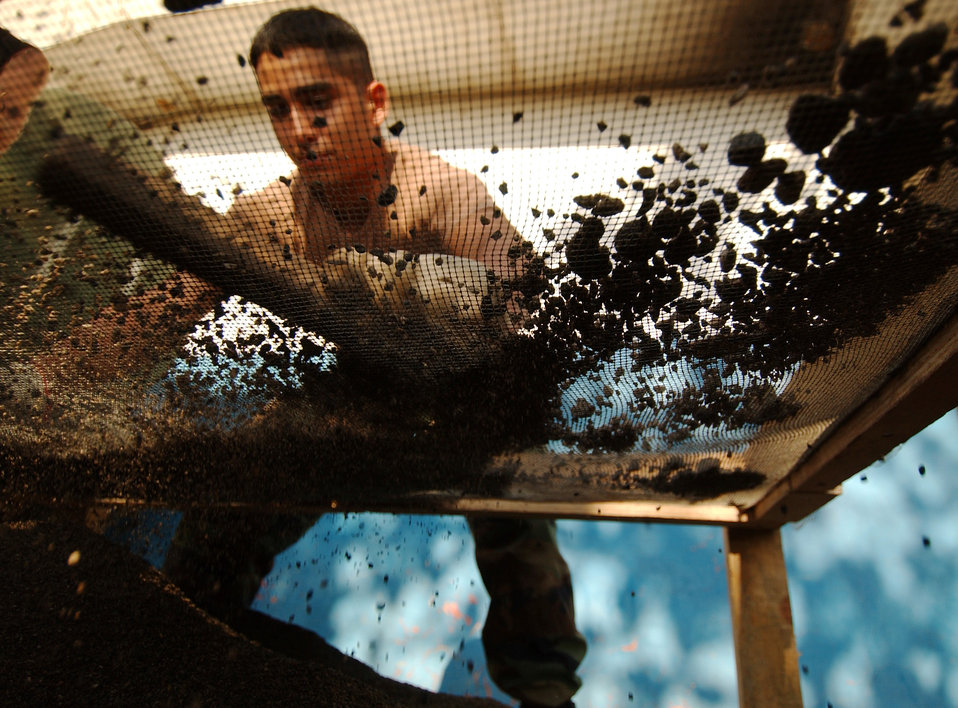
Shifting the rubble

TEPETITAN, El Salvador -- Airman 1st Class Emmanuel Solis uses a screen to separate the sand from the rocks Feb. 25, to use the sand for mortar during the construction of a new clinic for the 'Para Los Ninos' project here. The project will provide two new schools and three clinics in areas that were hit by earthquakes here. Airman Solis is assigned to the 28th Civil Engineer Squadron in Elsworth, S.D.